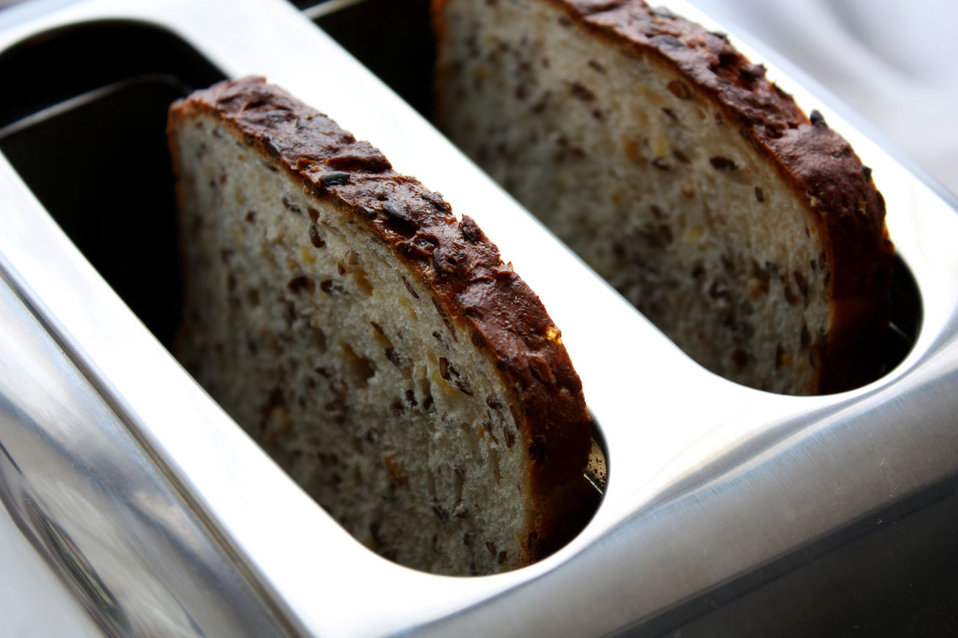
Toast in toaster.